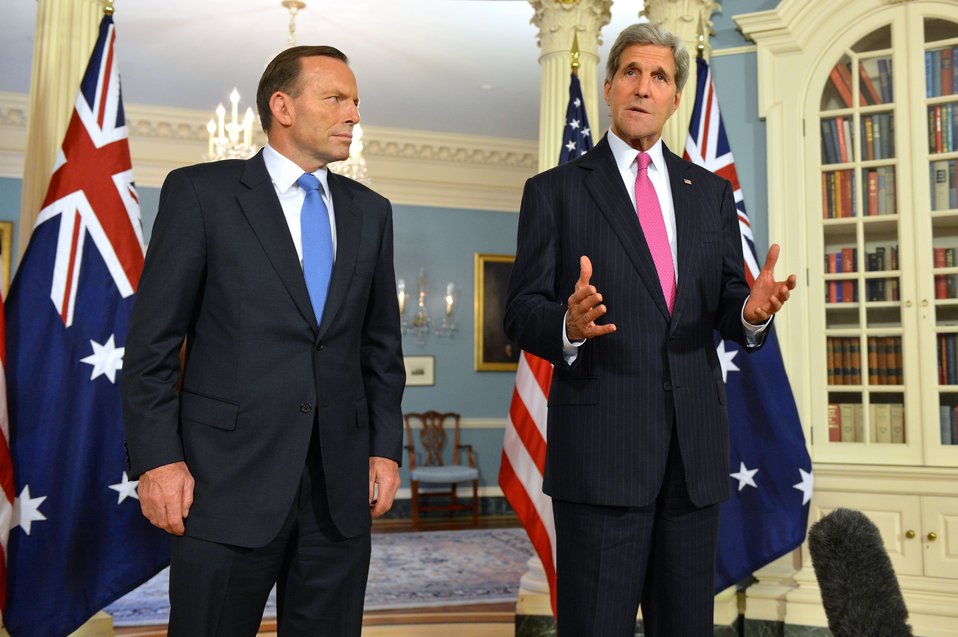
Secretary Kerry and Australian Prime Minister Abbott Address Reporters

U.S. Secretary of State John Kerry and Australian Prime Minister Tony Abbott address reporters at the U.S. Department of State in Washington, D.C., on June 12, 2014.